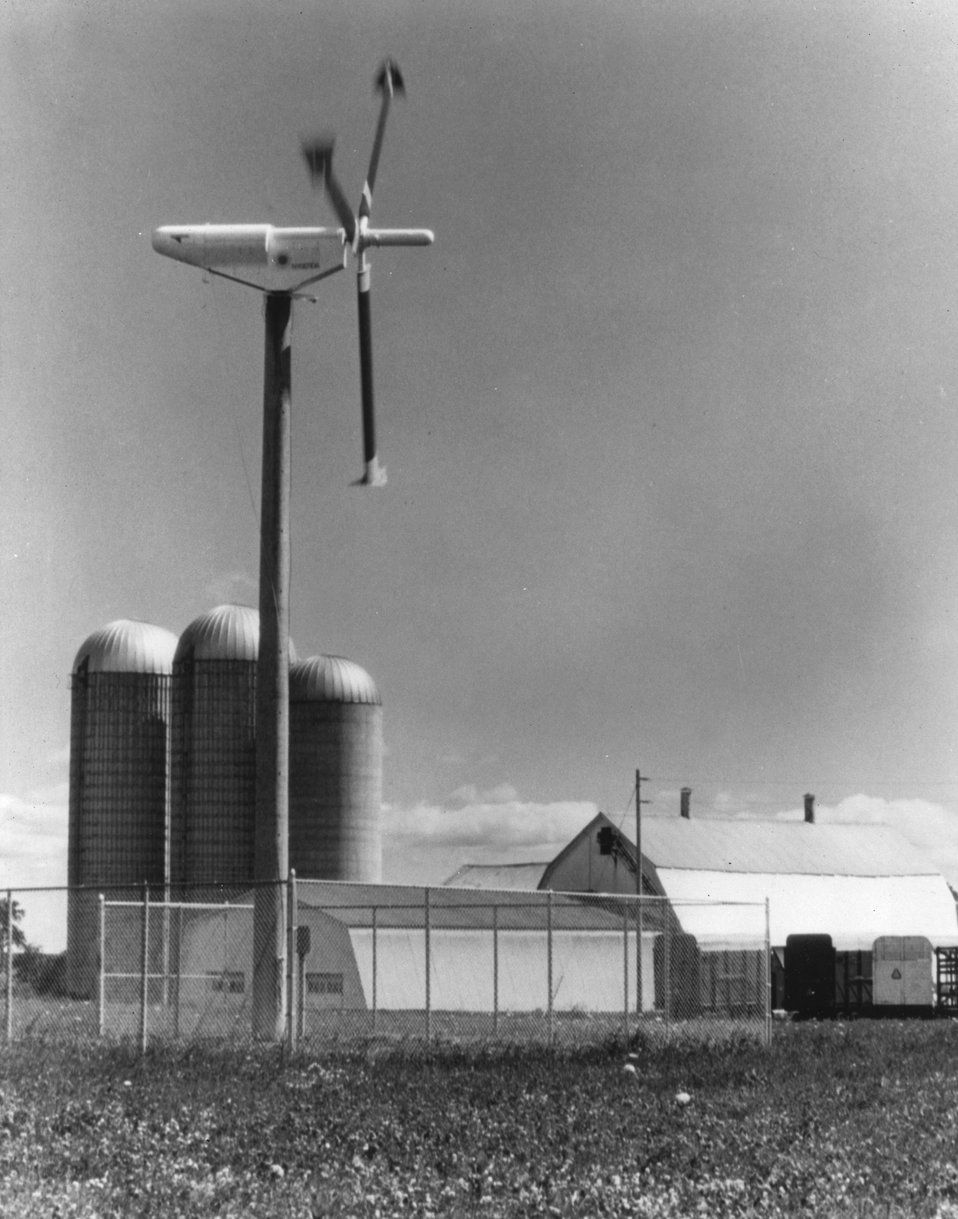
Wind generator on upstate New York farm. c. 1978